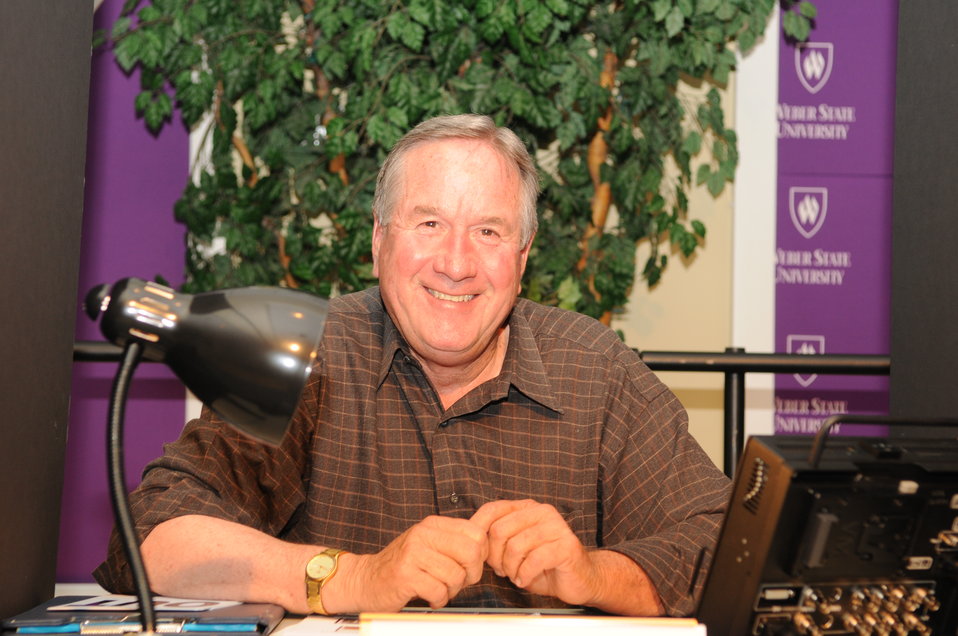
Artwork Judge

The U.S. Fish & Wildlife Service sponsored the 2012 Federal Duck Stamp Art Contest September 28 and 29 in Ogden, Utah, at Weber State University. A panel of five judges was responsible for choosing the art work used to design the 2013-2014 Migratory Bird Hunting and Conservation Stamp.